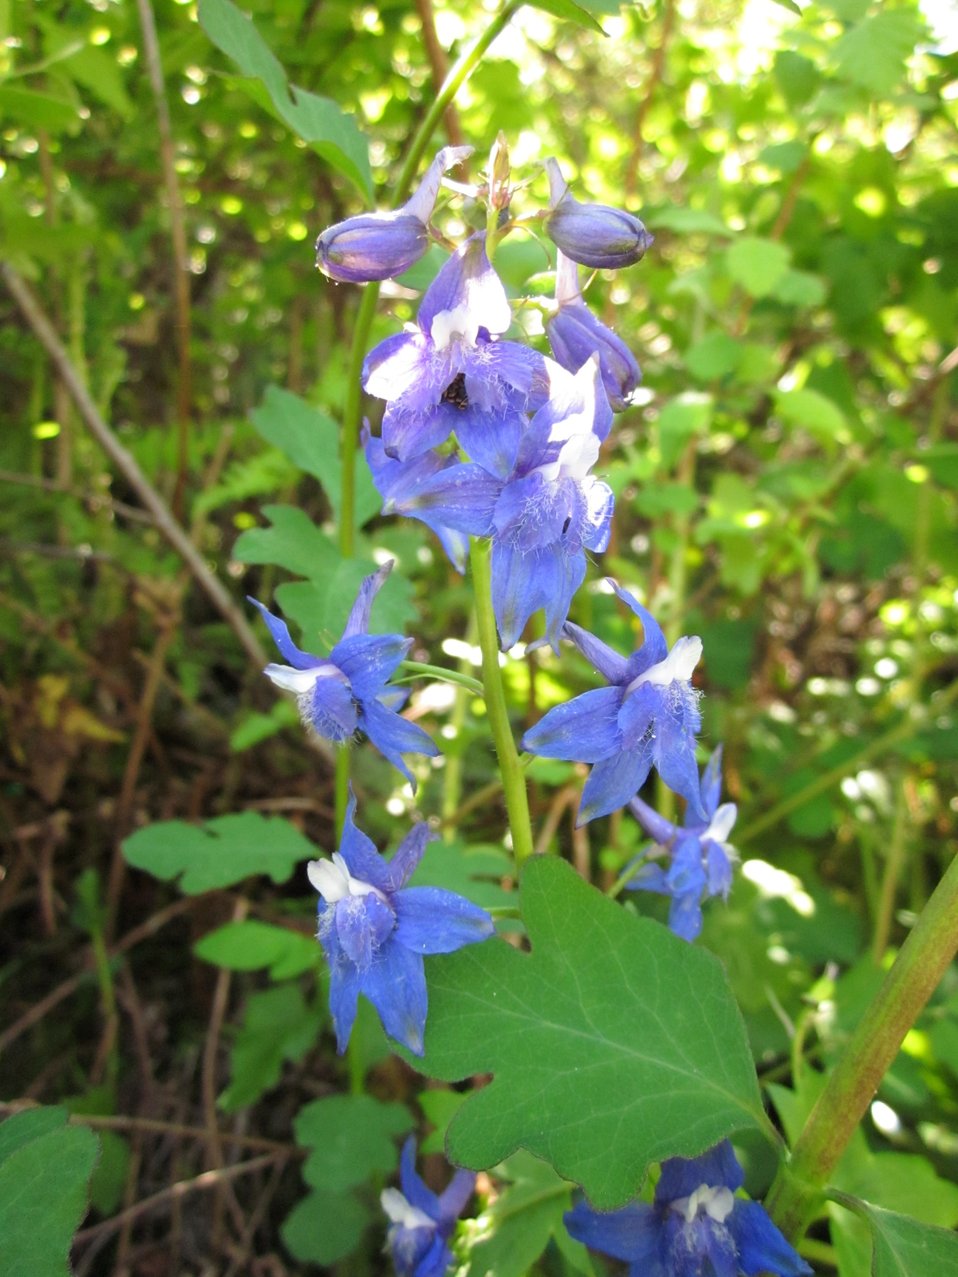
Baker's Larkspur

The Service's Partners for Fish and Wildlife Program is working with project partners and private landowners in the northern San Francisco Bay Area to establish several new populations of Baker's larkspur, one of California's most imperiled plant species, known from one remaining occurrence. Location: Marin Municipal Water District lands at Soulajule Reservoir, Marin County.